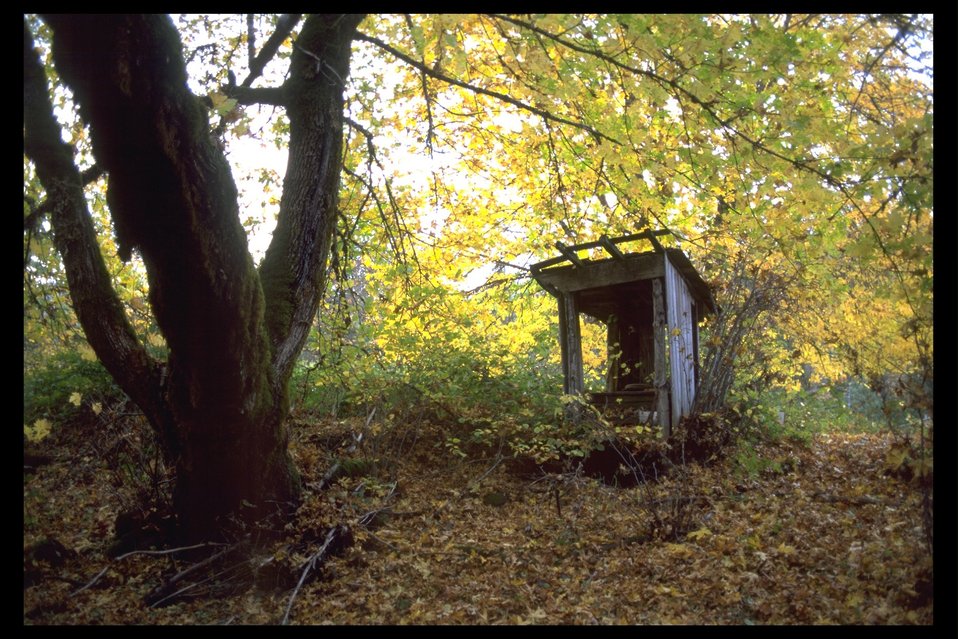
Elk Creek homestead.